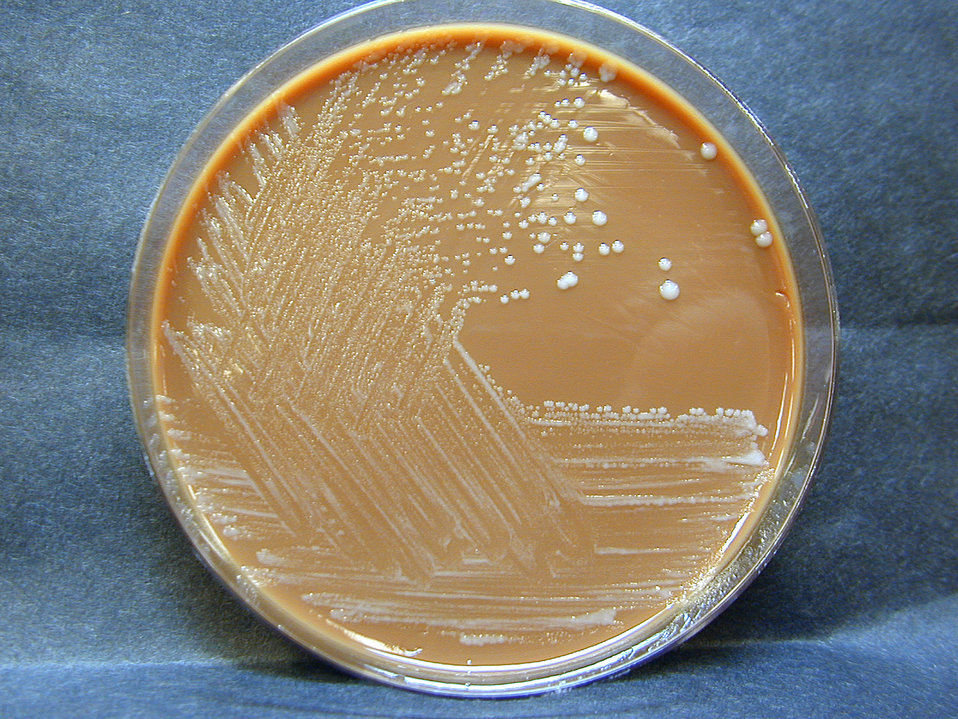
Francisella tularensis, Colonies grown on Chocolate Agar, 72 hours.